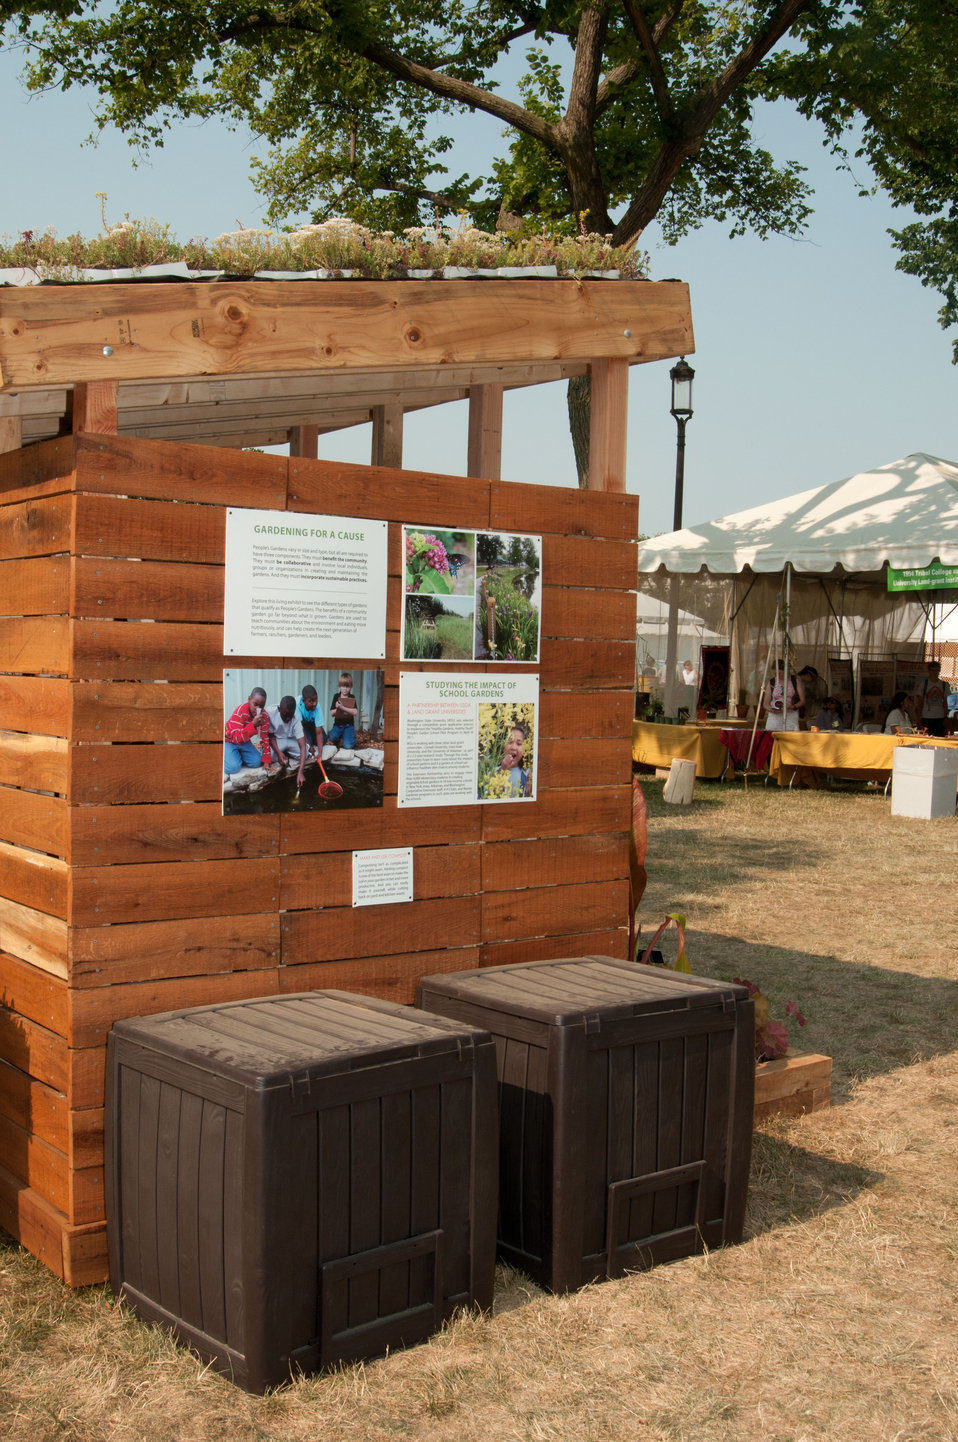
Compost bins next to U.S. Department of Agriculture People’s Garden Initiative Green Roof Shed at the 2012 Smithsonian Folklife Festival, on the National Mall in Washington, D.C., on Thursday, June 28, 2012. By collecting and composting yard and kitchen waste, you can make your garden soil richer and more productive. The siding on this shed is made of recycled lumber from trees that came down in storms. Green roofs are attractive, practical benefits include additional thermal protection, noise reduction and increase the life expectancy of the roof. U.S. Department of Agriculture (USDA) partnered with the University of the District of Columbia’s (UDC), Department of Agriculture and Urban Design on the design and construction of this shed. UDC is a Land Grant university. For more information and answers to questions such as how do you build a roof to accommodate a green roof? And is it possible to modify an already built roof to add a green roof? Go to blogs.usda.gov/2012/07/05/going-green-green-roofs-and-rai... One of the three themes this year is “Campus and Community.” It celebrates the 150 years of the USDA and the Land-Grant University System. The U.S. Department of Agriculture (USDA) and the Land-Grant system extend education across the country, contributing to American agriculture success and rural prosperity. “Campus and Community” has demonstrations, discussions, hands-on activities, and entertainment to that showcase the many ways that this partnership works to improve American agriculture and rural life.